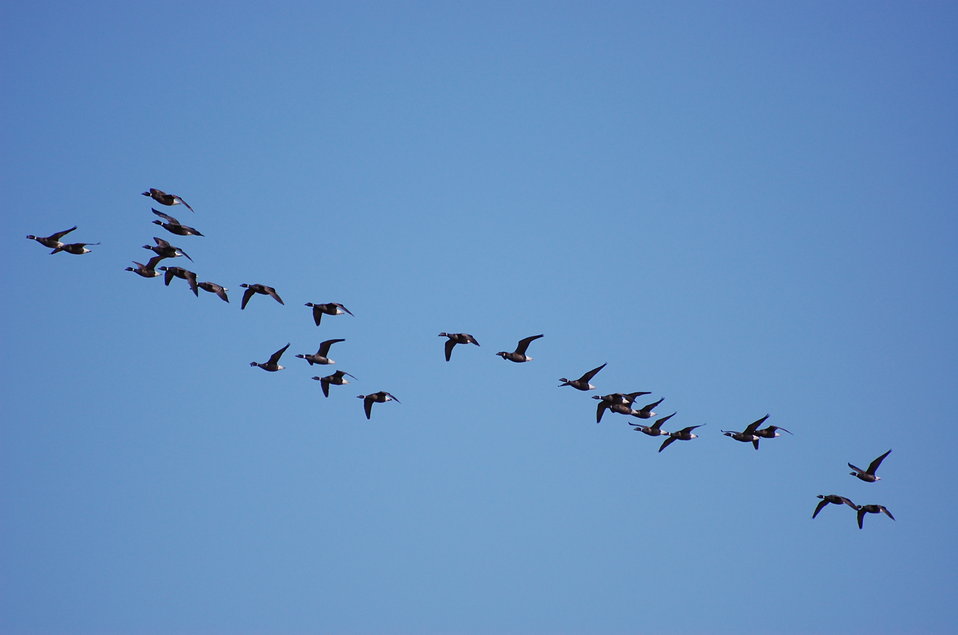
Brant at Izembek Lagoon

Izembek National Wildlife Refuge